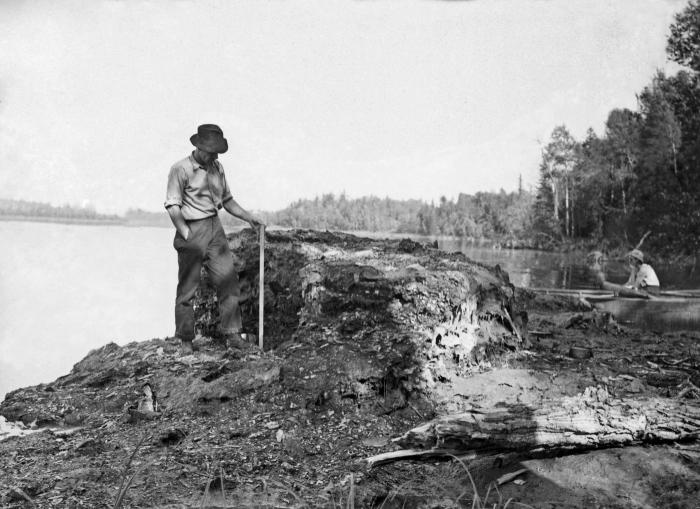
This historic 1937 photograph showed a mass of wood fibers, and mill waste lodged on a river bank a short distance downstream from an International Falls, Minnesota paper plant. The industrial facility was discharging its waste directly into the river through the plant's sewer outlet.